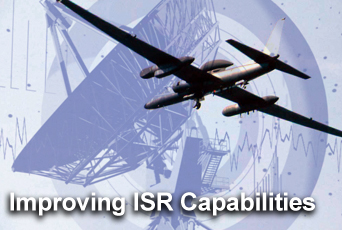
Changes planned for ISR community

Air Force officials are planning improvements to the services's intelligence, surveillance, and reconnaissance capabilities.